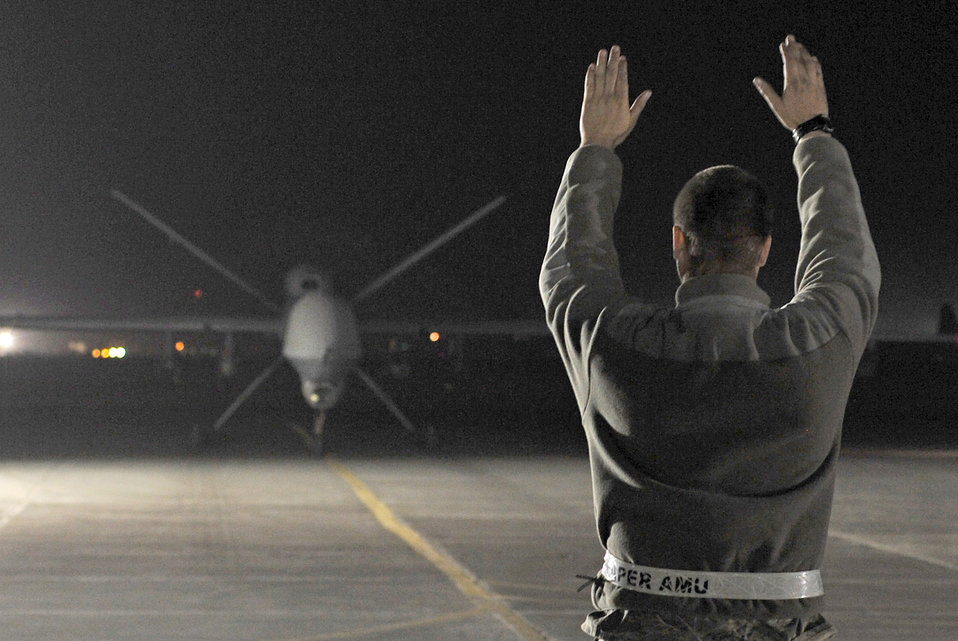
MQ-1 maintenance

A staff sergeant marshalls an MQ-9 Reaper after it returned from a mission Dec. 1, 2010, at Kandahar Airfield, Afghanistan.